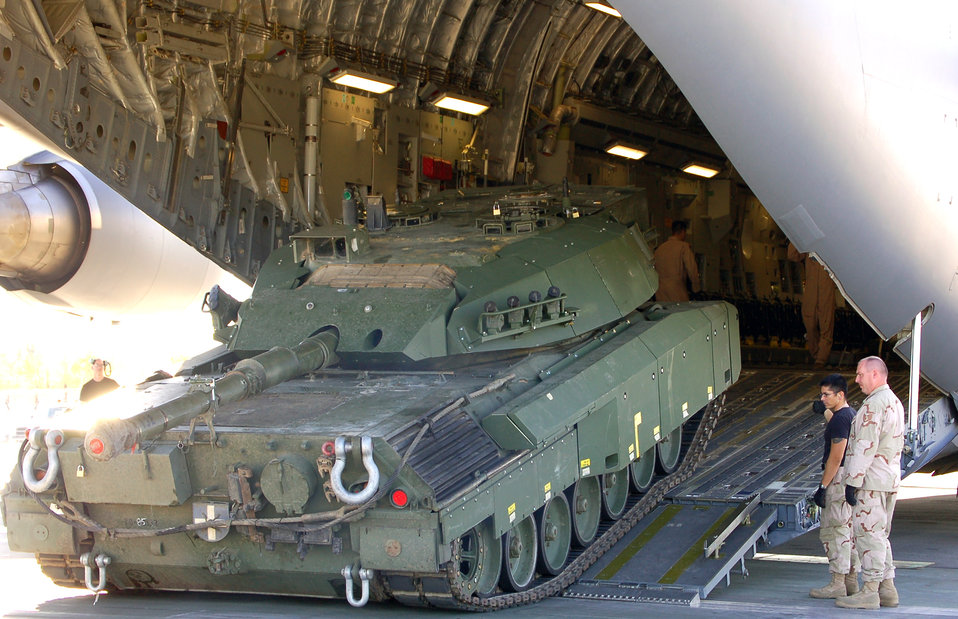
'Spirit of McChord' gives Canadians a lift

A Canadian Leopard tank is driven onto the C-17 Globemaster III named the